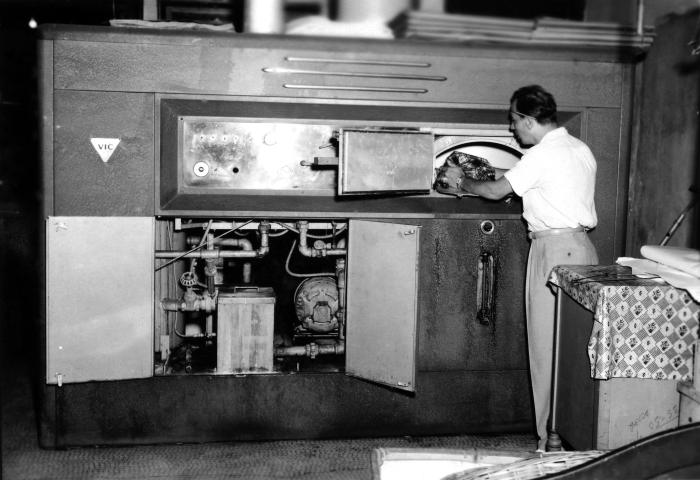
This 1950 historical photograph was provided by the Center for Disease Control's (CDC), National Institute for Occupational Safety and Health (NIOSH), and depicted industrial medicine in action. It showed a worker loading a 'Vic-90�' machine in a dry cleaning establishment. In the 1950s, concerned with hazards in the dry cleaning workplace, the Industrial Hygiene Division (IHD) investigated dry cleaning environments. New non-flammable cleaners had recently been introduced, which created concerns about their toxicity.As of 2005, there were approximately 36,000 dry cleaning businesses in the U.S., most employing less than ten people. The focus today is on the perchloroethylene (tetrachloroethylene of 'Perc'), used as a solvent in 85% of dry cleaning shops. It is carcinogenic in animals, and suspected to be so in humans.